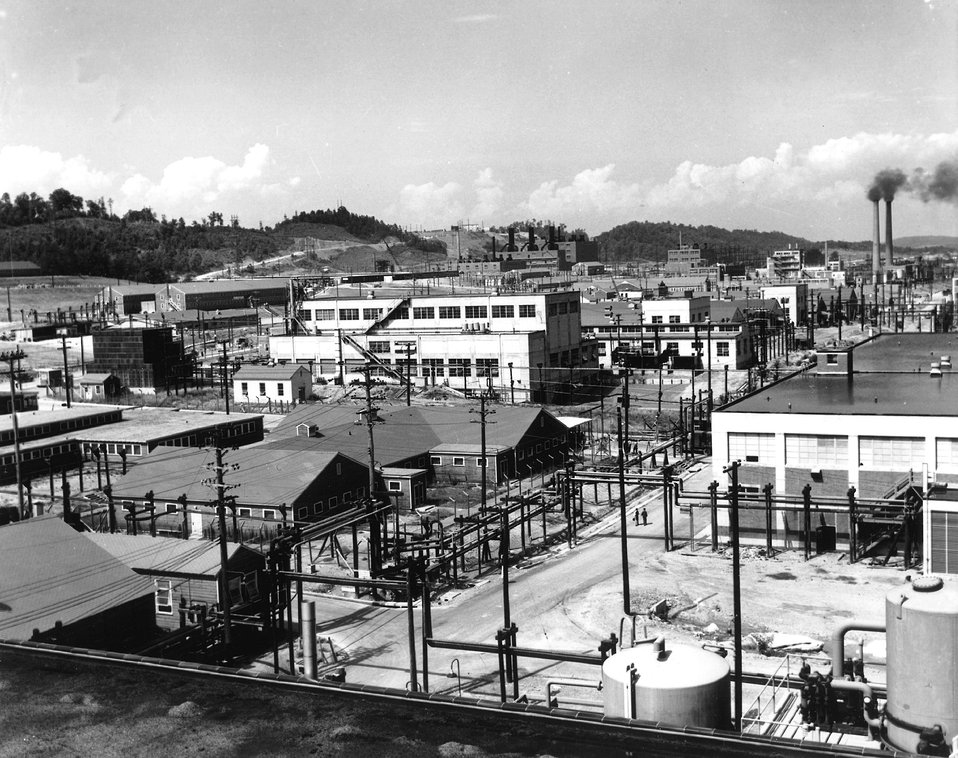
As part of the wartime secrecy effort, the designation Y-12 given the electromagnetic plant had no meaning except to confuse enemy agents. c. 1945